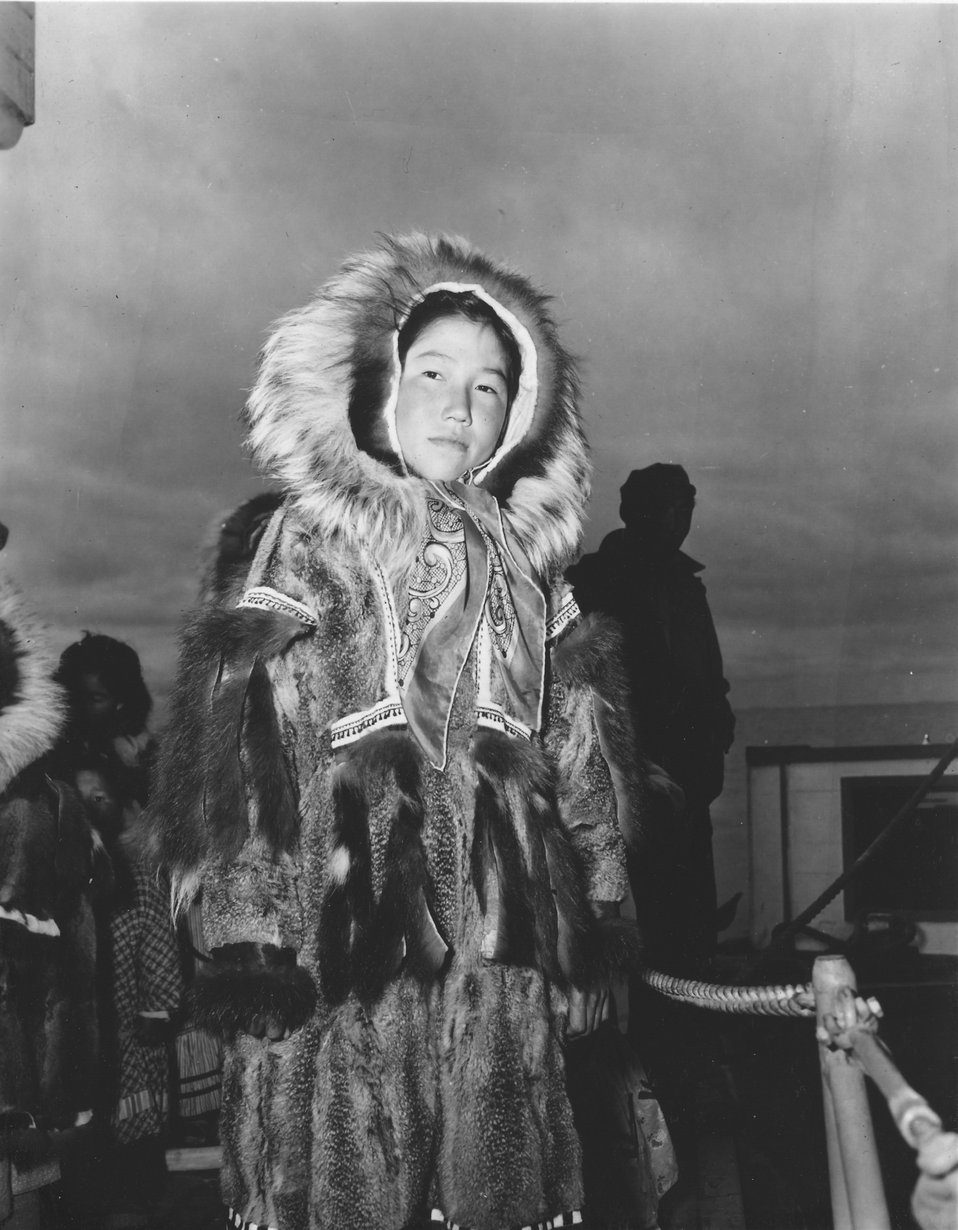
Eskimo girl visiting the C&GS ship EXPLORER, probably at St. Paul Island.